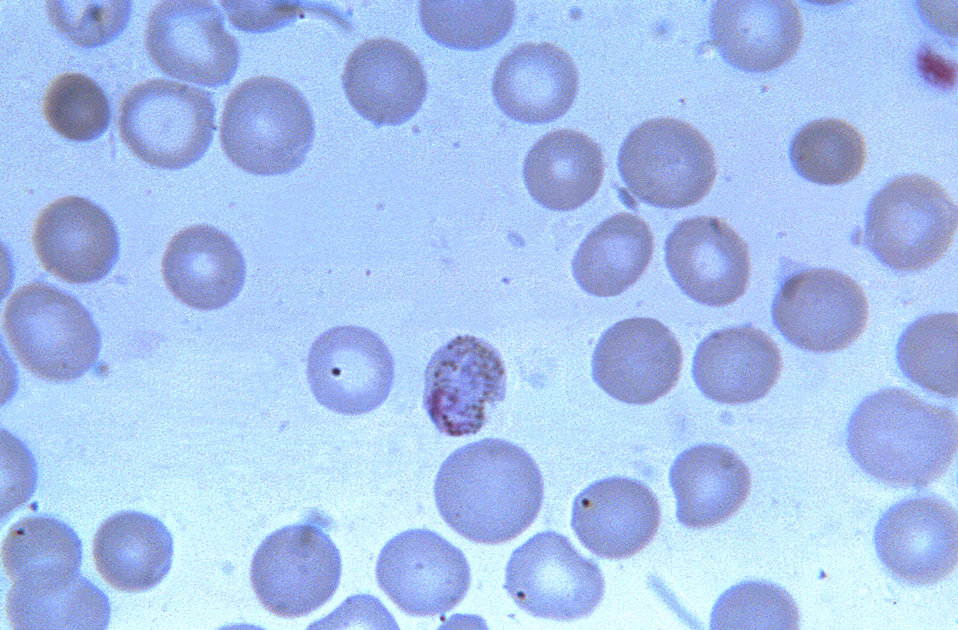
This thin film micrograph shows a mature, pigmented P. malariae trophozoite, stretched chromatin and irregular cytoplasm.